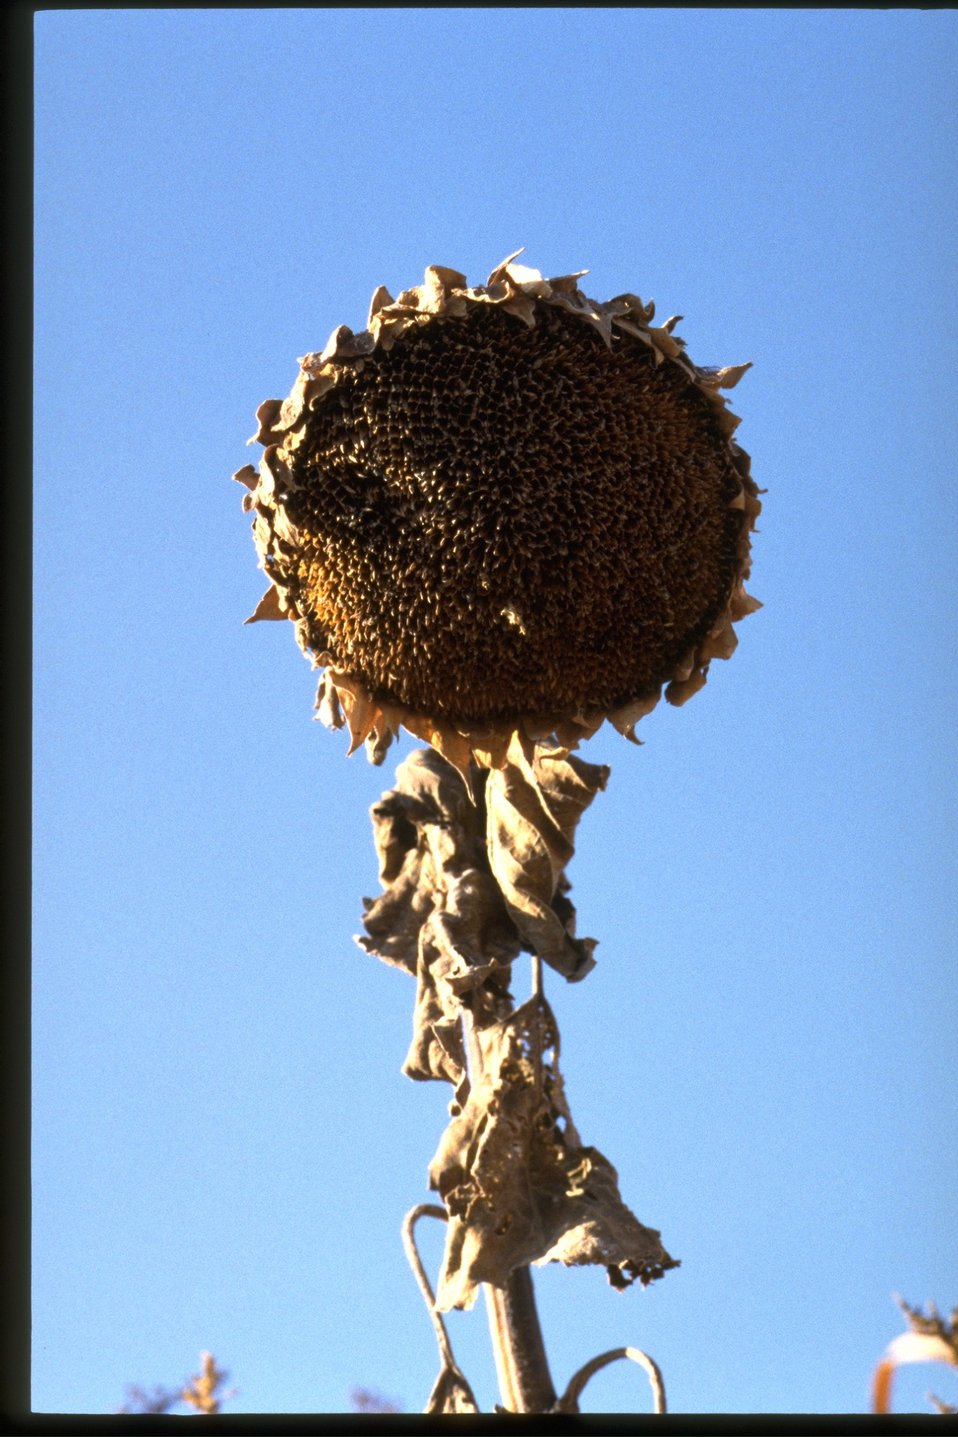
A sunflower seed head (spent) in the John Day River area.